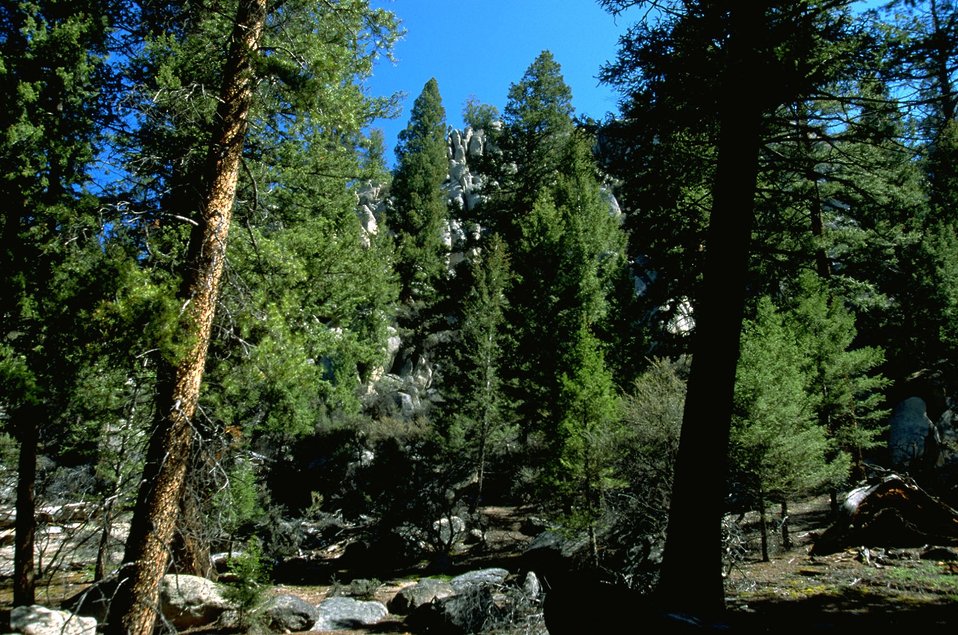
Rock formation and tall trees